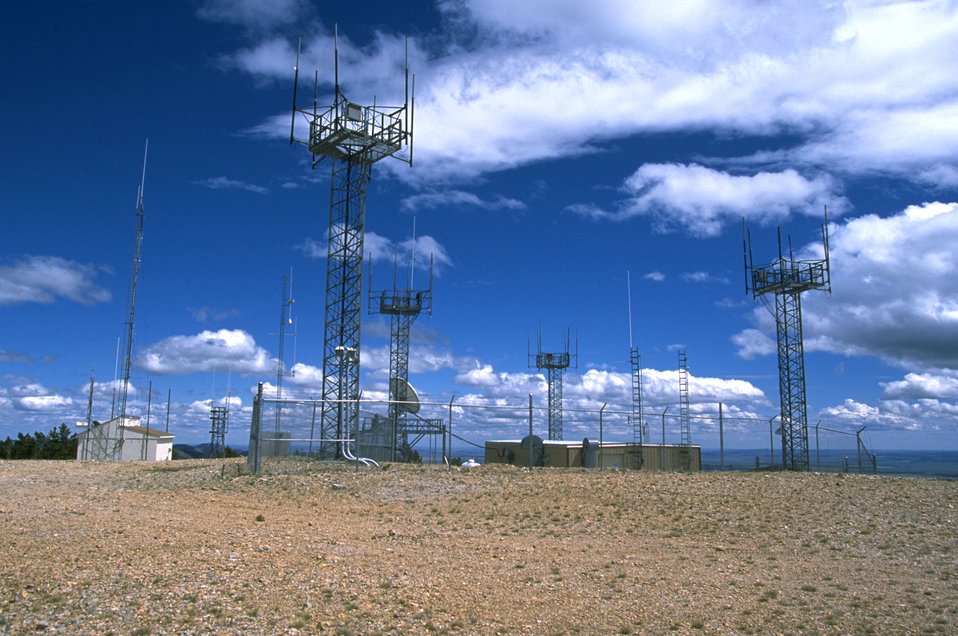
Judith Peak Communications Site